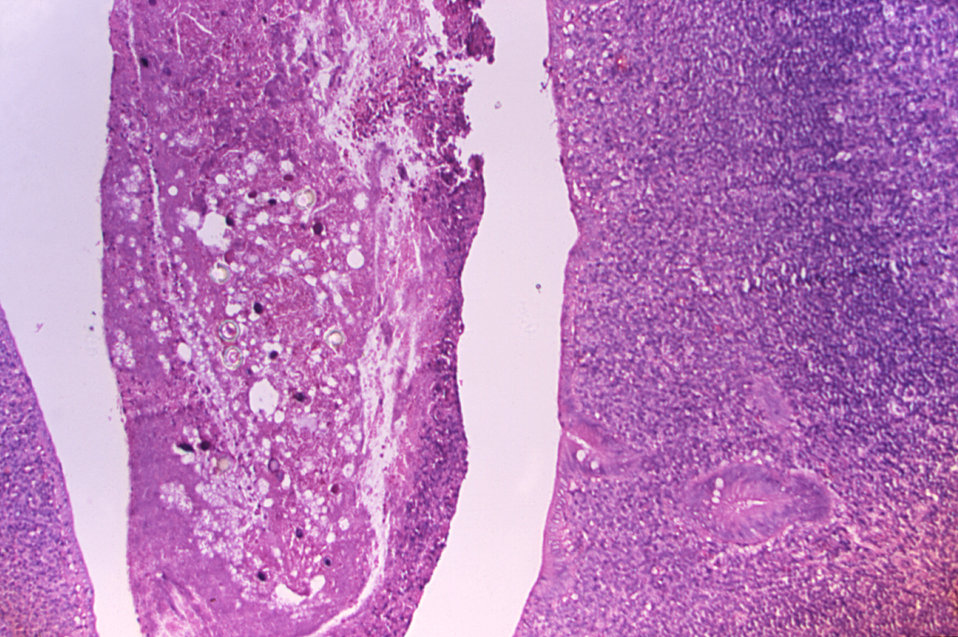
Histopathology of Taenia saginata in appendix. Parasite.